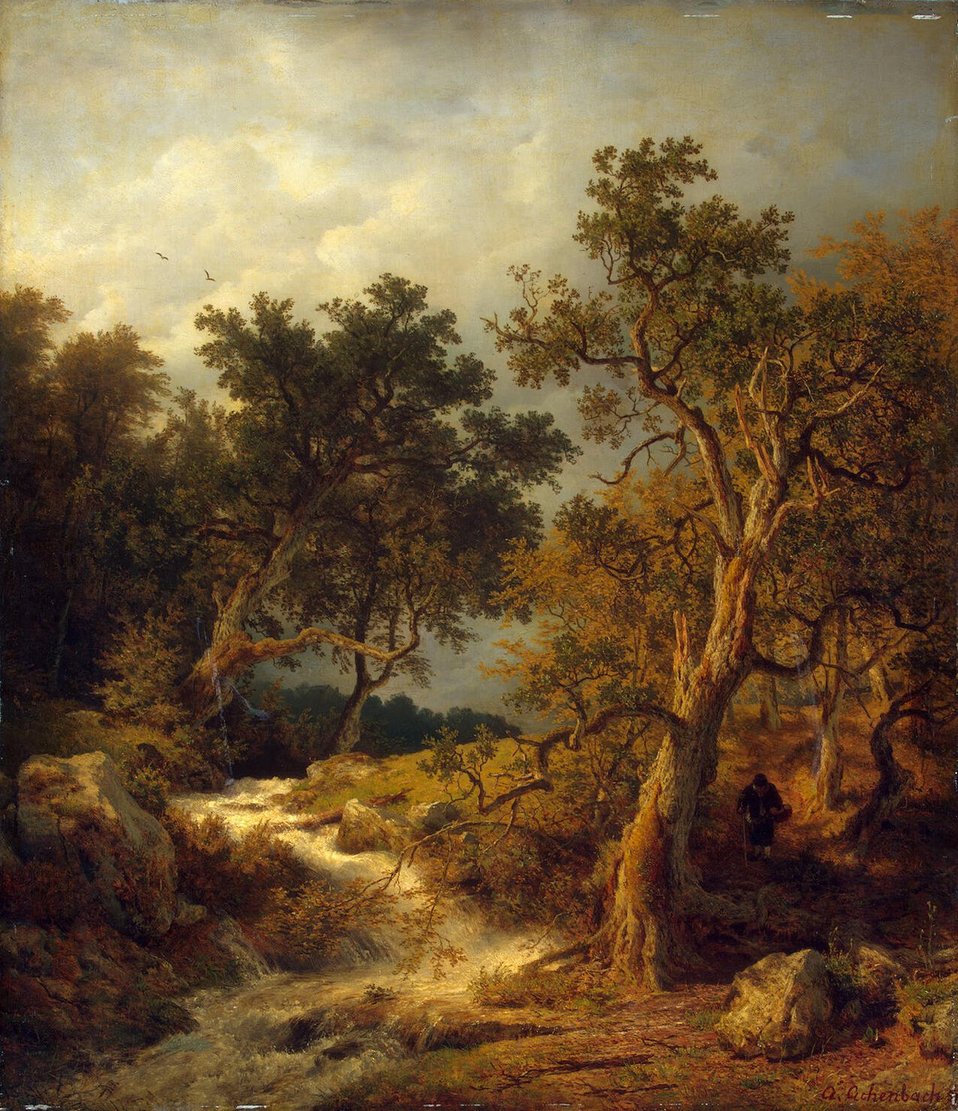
Andreas Achenbach - Landschaft mit Bach